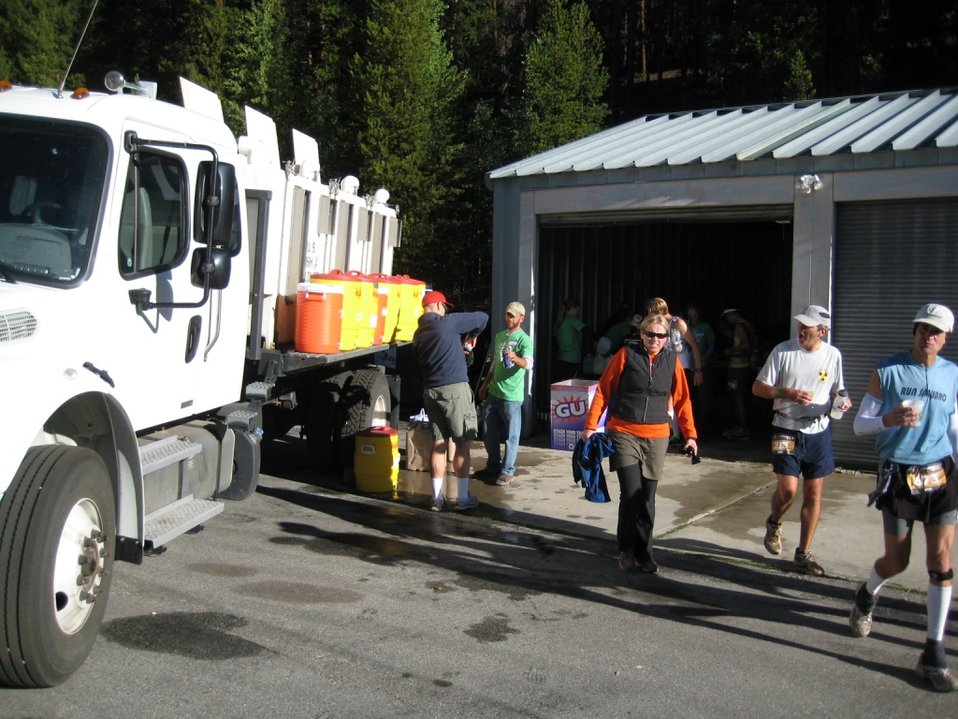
Fish distribution truck as drink dispenser

Leadville National Fish Hatchery served as an aid station for miles 24 and 76 during the Leadville Trail 100 run in August. Runners could rehydrate with coolers on a fish distribution truck.